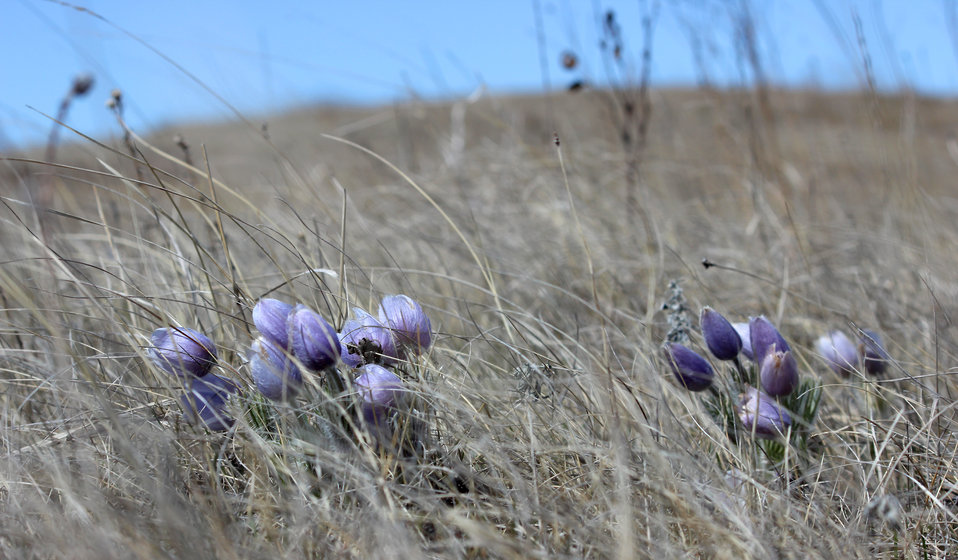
Pasqueflowers

The pasqueflower (or May flower or crocus, among other names) is a species native to the northern U.S. and Canada. It is usually found only on sod that has never been broken. It is one of the earliest bloomers, and shows up as daubs of pale purple against the yellow and browns of the grasses in April and early May in North Dakota. These were found on the North Brinkman WPA in the Kulm Wetland Management District.